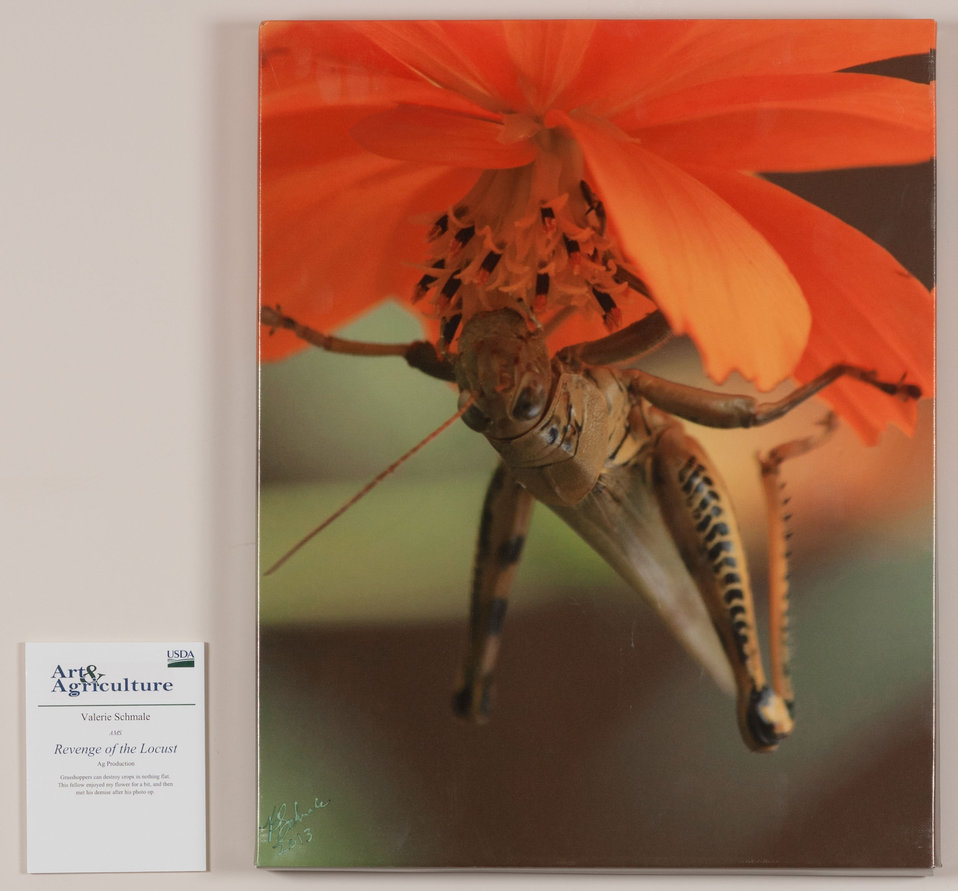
Online Viewer's Choice entries of the 2013 Art & Agriculture, Tuesday, July 9, 2013, in the South Building, Washington, D.C. Themes were expressed by employees from across the department and the contest was open to full-time and part-time USDA employees. Winning artwork will be displayed till the end of the year. U.S. Artistic expression is a creative outlet that is vital for an individual to grow and develop.